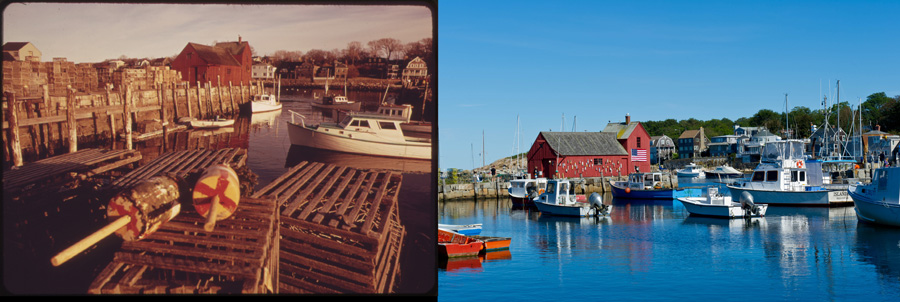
Rockport, MA 1973 and 2011

'Then' Documerica Photo: February, 1973 Rockport Harbor Lobster Pots and Buoys by Deborah Parks.
'Now' State of the Environment Photo: September, 2011 Photo by Margo Palmer.

DOCUMERICA photographer Deborah Parks contributed photos from the quaint seaside town of Rockport, Massachusetts.

Join in at www.flickr.com/groups/ourenvironment